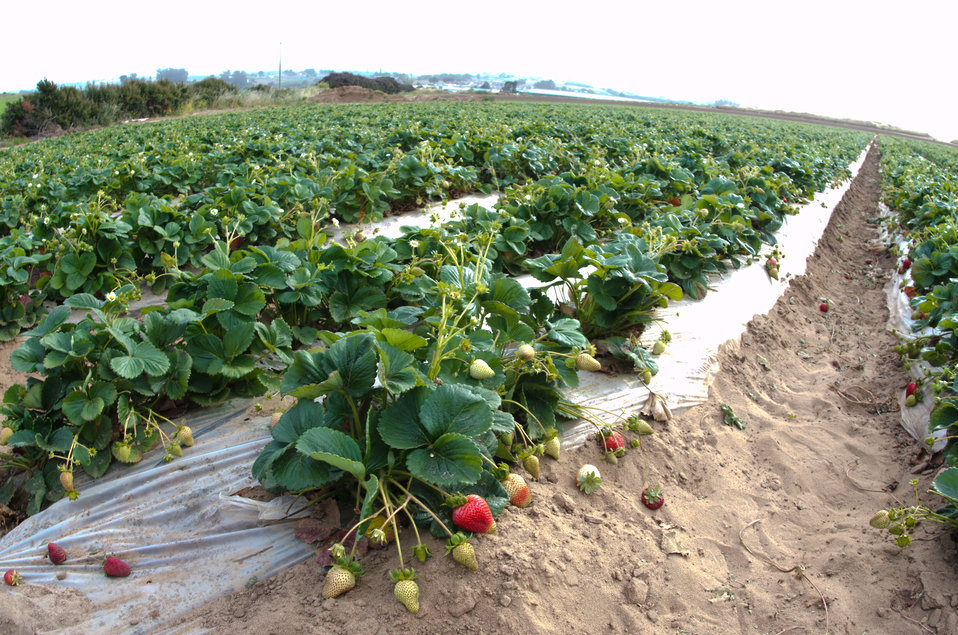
A strawberry farm near Castroville, CA, on Thursday, June 16, 2011.